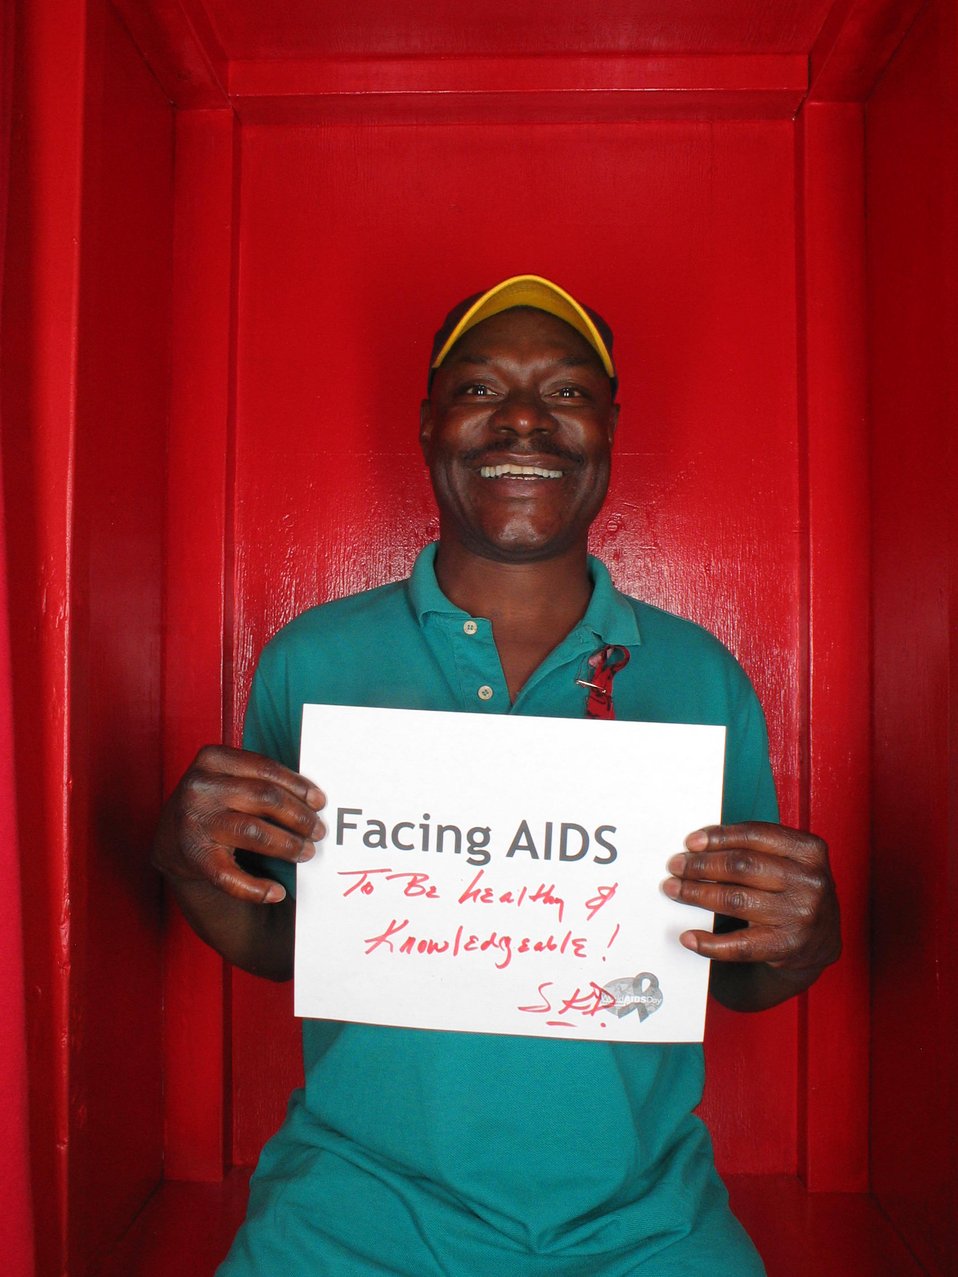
Facing AIDS to be healthy and knowledgable